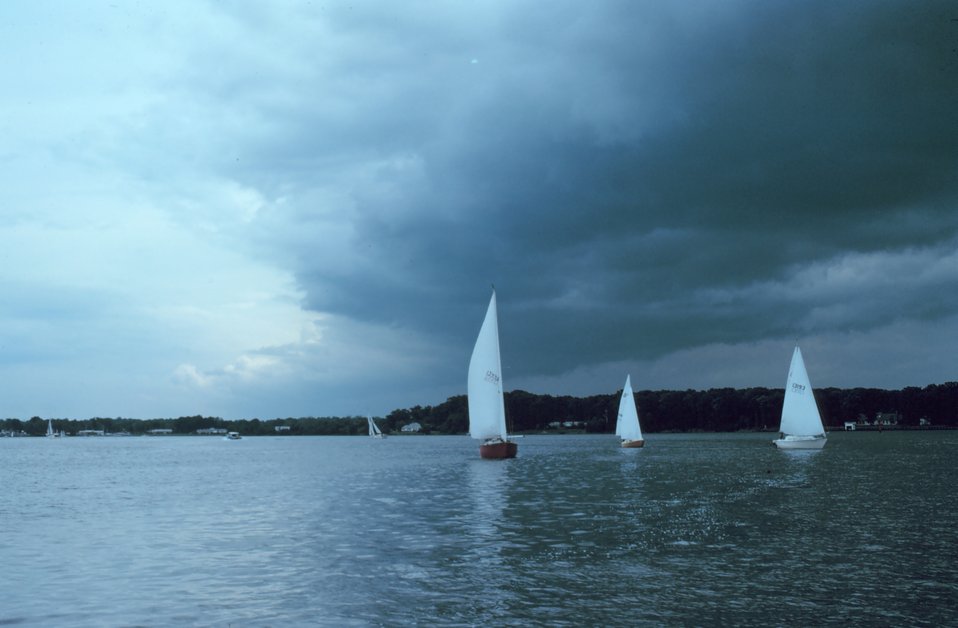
A squall line threatens sailors